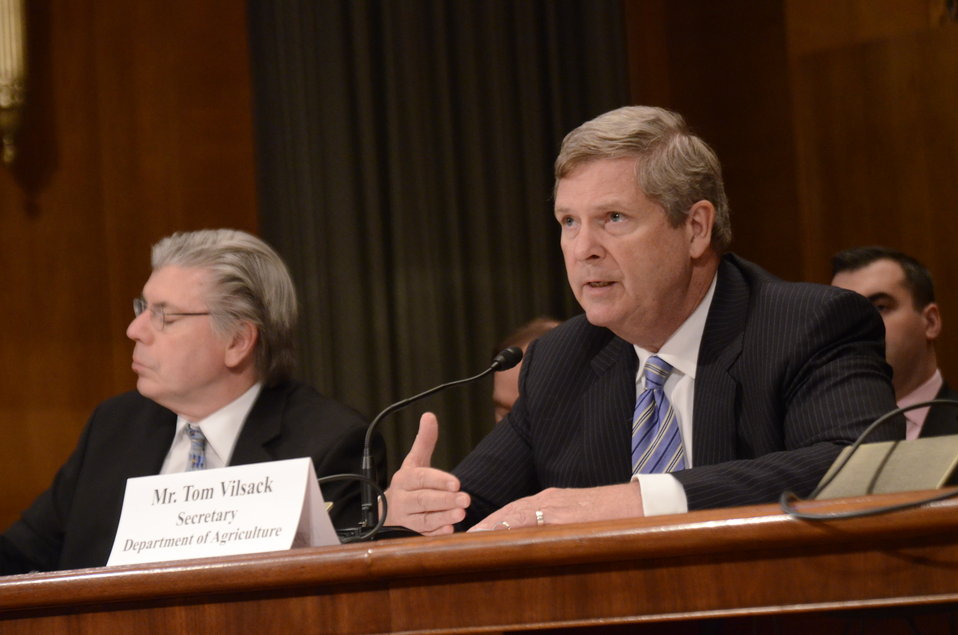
Agriculture Secretary Tom Vilsack testifies before the Senate Agriculture Appropriations Committee on the fiscal year 2013 budget at the Dirksen Senate Office Building in Washington, D.C., on Thursday, March 29, 2012.